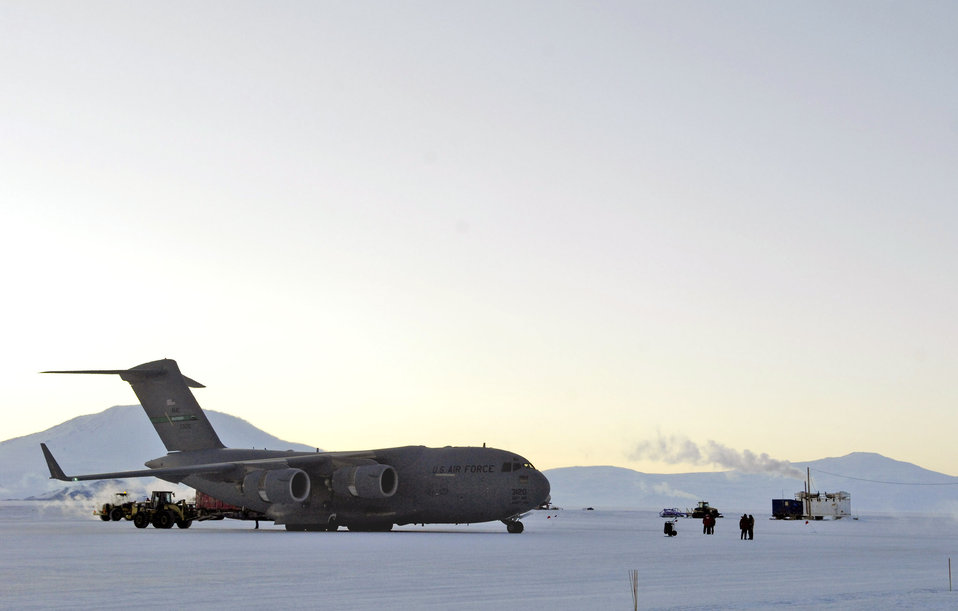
Operation Deep Freeze 2007-08 begins

A C-17 Globemaster III is downloaded during the winter fly-in for Operation Deep Freeze Aug. 20 at Pegasus Runway in Antarctica. A C-17 and 31 Airmen from McChord Air Force Base, Wash., began the annual winter fly-in augmentation of scientist, support personnel, food and equipment for the U.S. Antarctic Program at McMurdo Station. WinFly is the opening of the first flights to McMurdo Station, which closed for the austral winter in February.